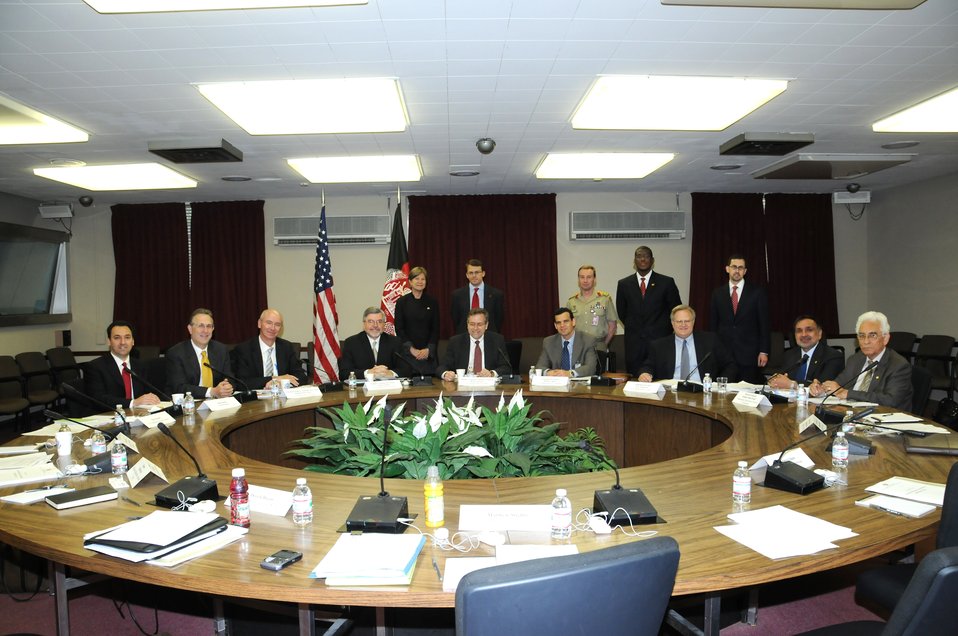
Governance Interagency Working Group Session of the U.S.-Afghanistan Strategic Partnership Dialogue

U.S. Assistant Secretary for Population, Refugees and Migration Schwartz, U.S. Assistant Treasury Secretary Cohen, Afghan Director of the Independent Directorate for Local Governance (IDLG) Popal, and Afghan Director of High Office of Oversight Osmani discuss issues at the Governance Interagency Working Group Session of the U.S.-Afghanistan Strategic Partnership Dialogue at the U.S. Department of State, Washington, D.C., May 11, 2010.